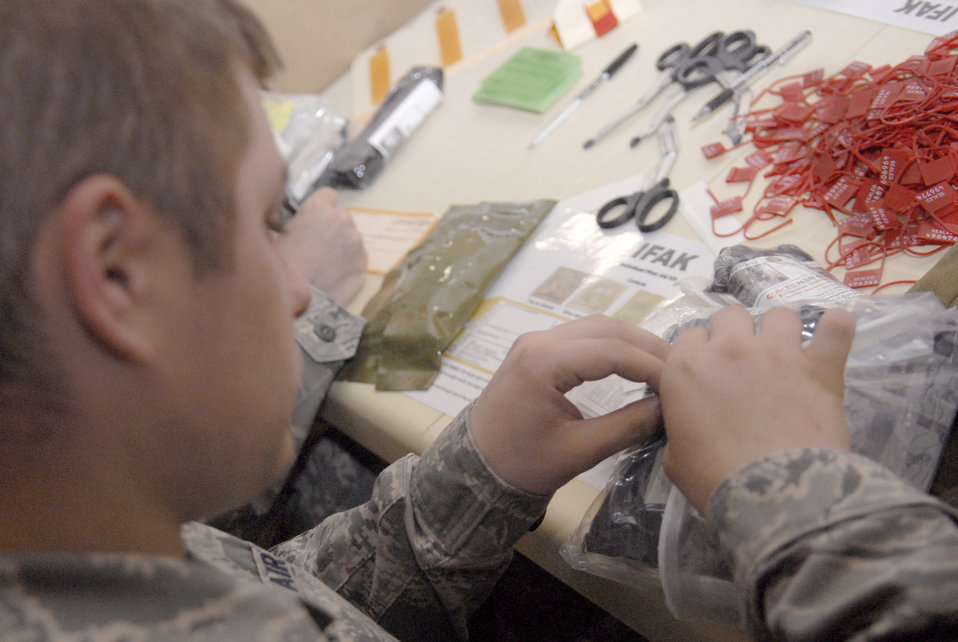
Pitching in

Senior Airman Jonathan Bose assembles individual first aid kits April 9 at an air base in Southwest Asia. The individual first aid kits are given to Airmen who are going to locations throughout the U.S. Central Command's area of responsibility. Airman Bose is assigned to the from the 379th Expeditionary Communications Squadron and volunteered to assemble individual first aid kits. He hails from Terre Haute, Ind., and is deployed from 181st Intelligence Air National Guard Wing Hulman Field, Ind.